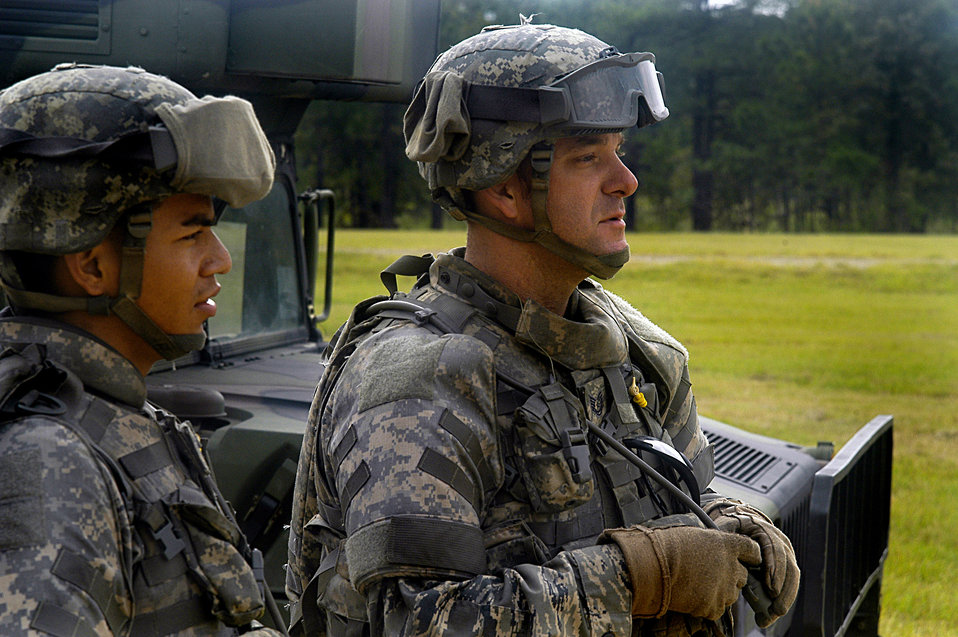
Airmen train at Fort Bragg for 'outside the wire' deployment

Staff Sgt. Nelson Figuerora (left) and Tech Sgt. Wiley Cooey look on as fellow Airmen and Soldiers perform live-fire exercises Sept. 23 at Fort Bragg, N.C. The two Airmen are performing Combat Skills Training at Fort Bragg in preparation for their upcoming PRT deployment to Afghanistan. Both assigned to the Paktya Provincial Reconstruction Team.